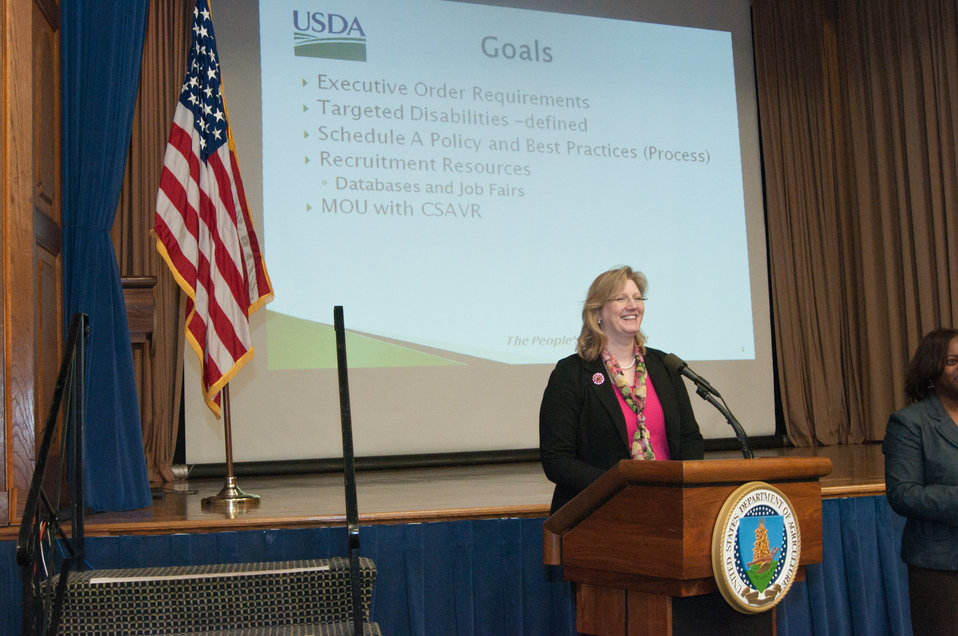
U.S. Department of Agriculture (USDA) Office of Human Resources Management (OHRM) Disability Employment Program Manager Alison Levy discusses recruitment and hiring of people with disabilities: policies, procedures and best practices at USDA’s OHRM Disability Employment Program Team Training at USDA in Washington, D.C. on Tuesday, May 14, 2013. Susie Needham interprets for hearing-impaired employees during the event.